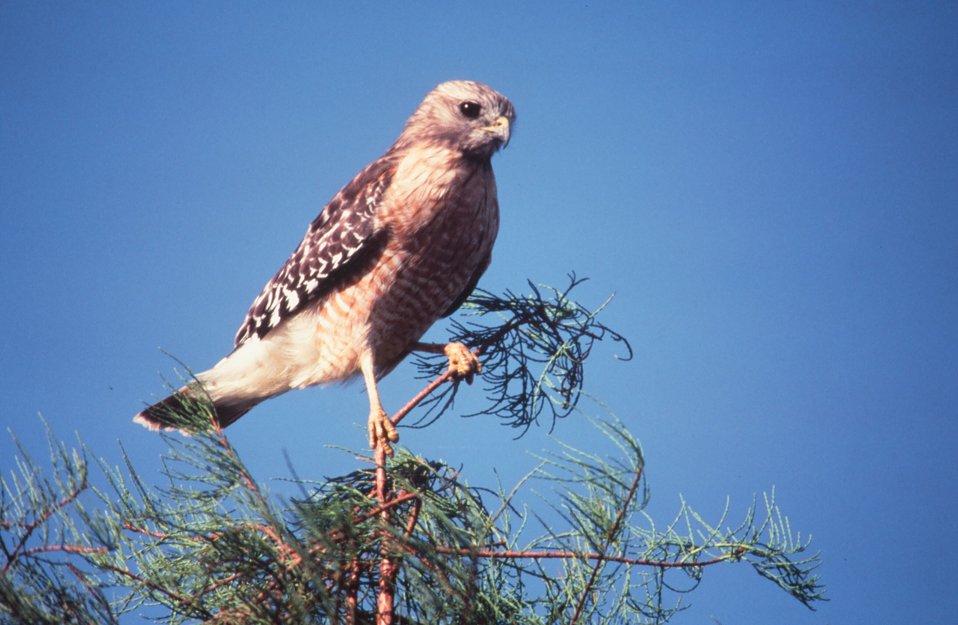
Red-shouldered hawk

This hawk is named after it's distinctive red-shoulders.